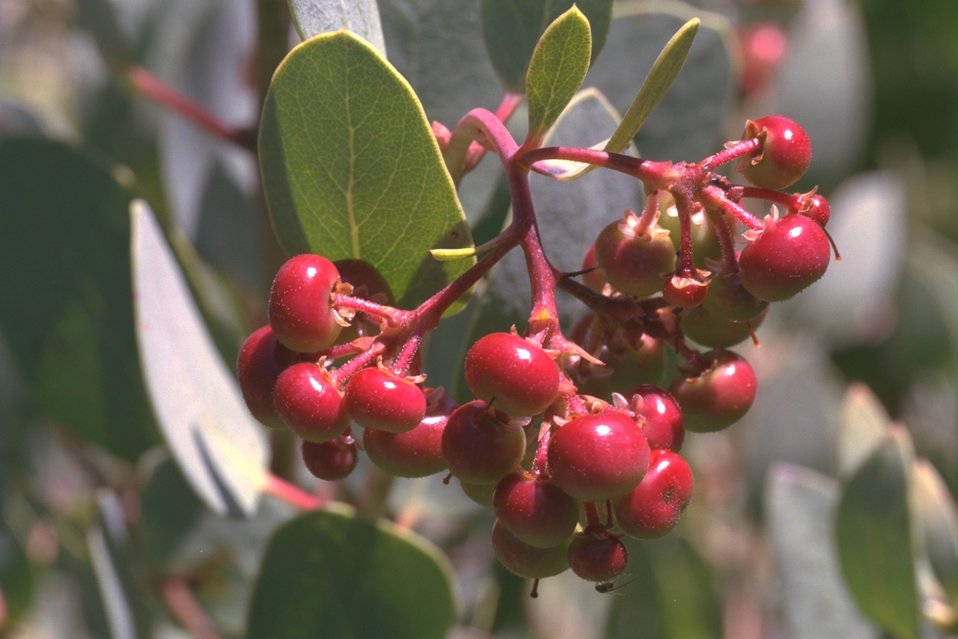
Manzanita Fruit near Goolaway Gap.